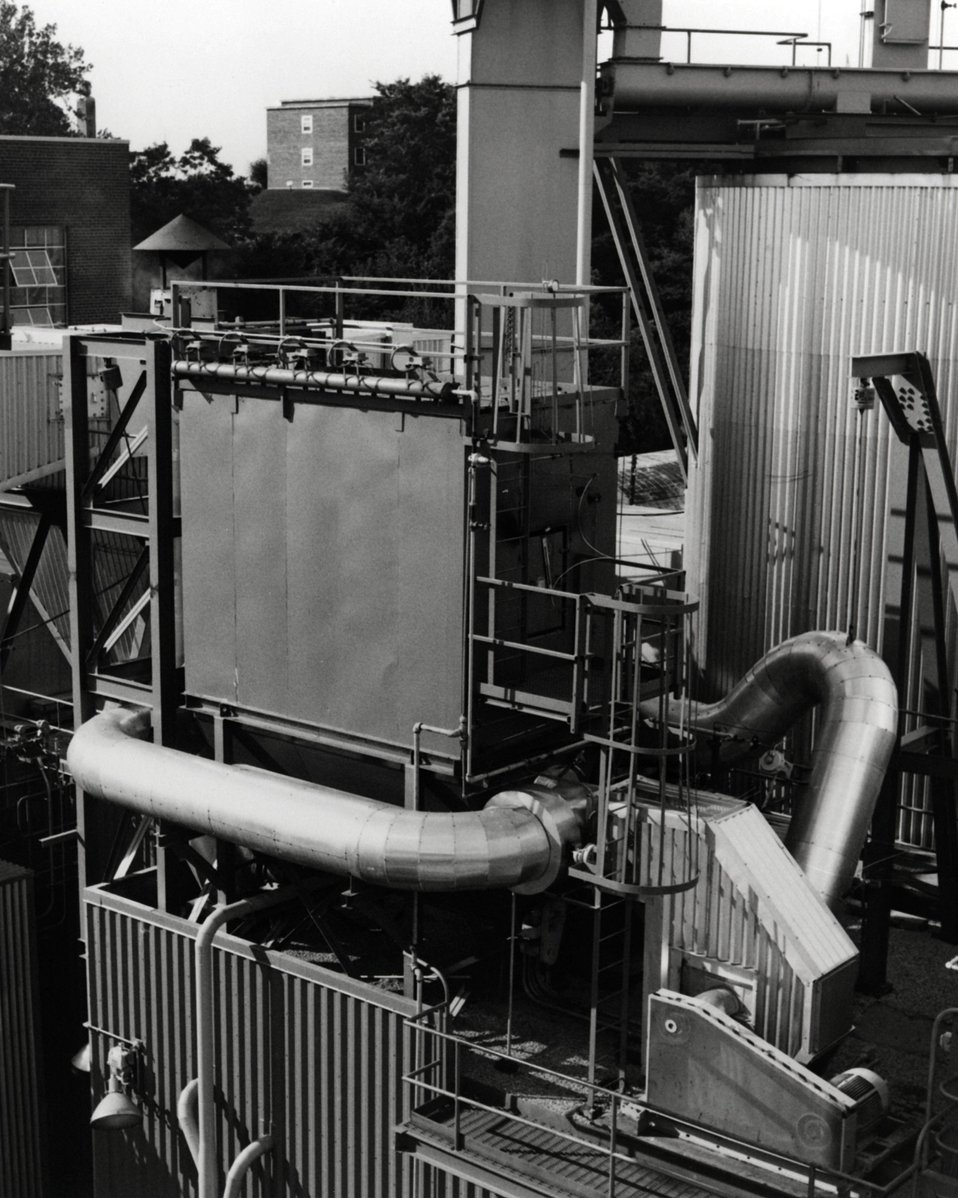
THE COAL DRYER BAGHOUSE (FOREGROUND) AND THE PREPARED COAL SILO (BACKGROUND) AT THE GREAT LAKES AFB PROJECT.

OBJECTIVES OF THE GREAT LAKES AFB STEAM BOILER PROJECT ARE THE DESIGN, CONSTRUCTION, TESTING, AND OPERATION OF A PRO- TO TYPE BOILER TO ESTABLISH THE PRACTICALITY OF BURNING HIGH-SULFUR COAL AND THE COMPILATION OF SUFFICIENT DATA FROM PROTOTYPE OPERATIONS TO ENABLE THE INDUSTRY TO DESIGN AND OPERATE FULL-SIZE UNITS IN INDUSTRIAL PLANTS. THE GREAT LAKES PROJECT IS USING A 50,000 LB/HR SUPERHEATED STEAM BOILER WITH A COAL RATE OF 2.5 TONS/HR.